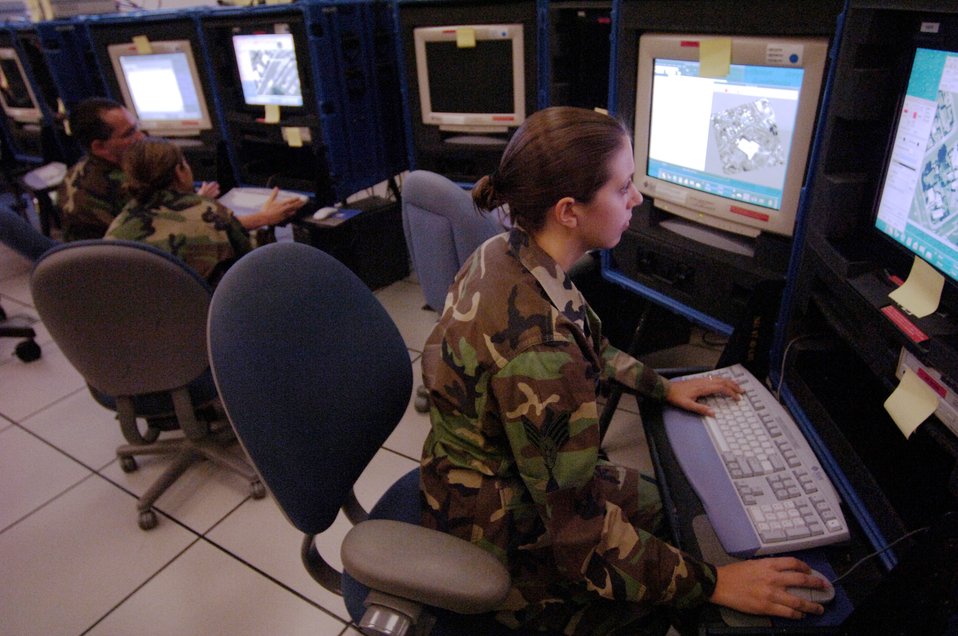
Technology for the battlefield

HICKAM AIR FORCE BASE, Hawaii (AFPN) -- Senior Airman Stephanie Pitassi conducts quality control during a training mission at a distributed ground stations for the Predator Unmanned Aerial Vehicle. Unmanned aerial vehicles represent a new way of using technology to remotely affect the battlefield.